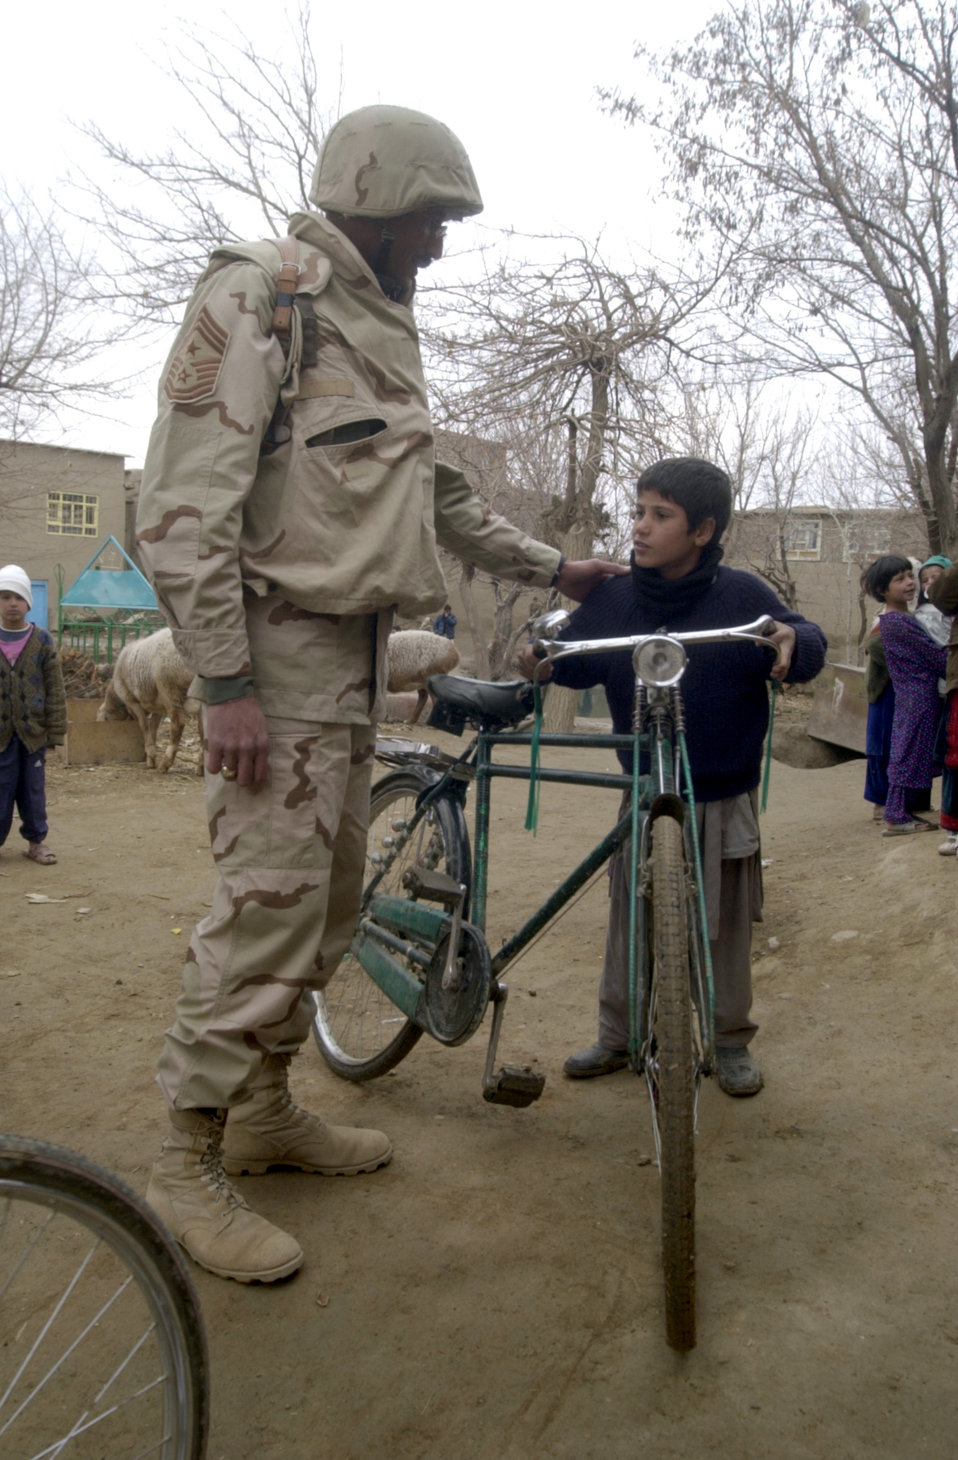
Adopt a Village

JANGADAM VILLAGE, Afghanistan -- Chief Master Sgt. Timothy Sydnor visits with a child here during the 455th Expeditionary Operations Group's delivery of humanitarian supplies Dec. 31. Sydnor is the 455th Air Expeditionary Wing command chief.